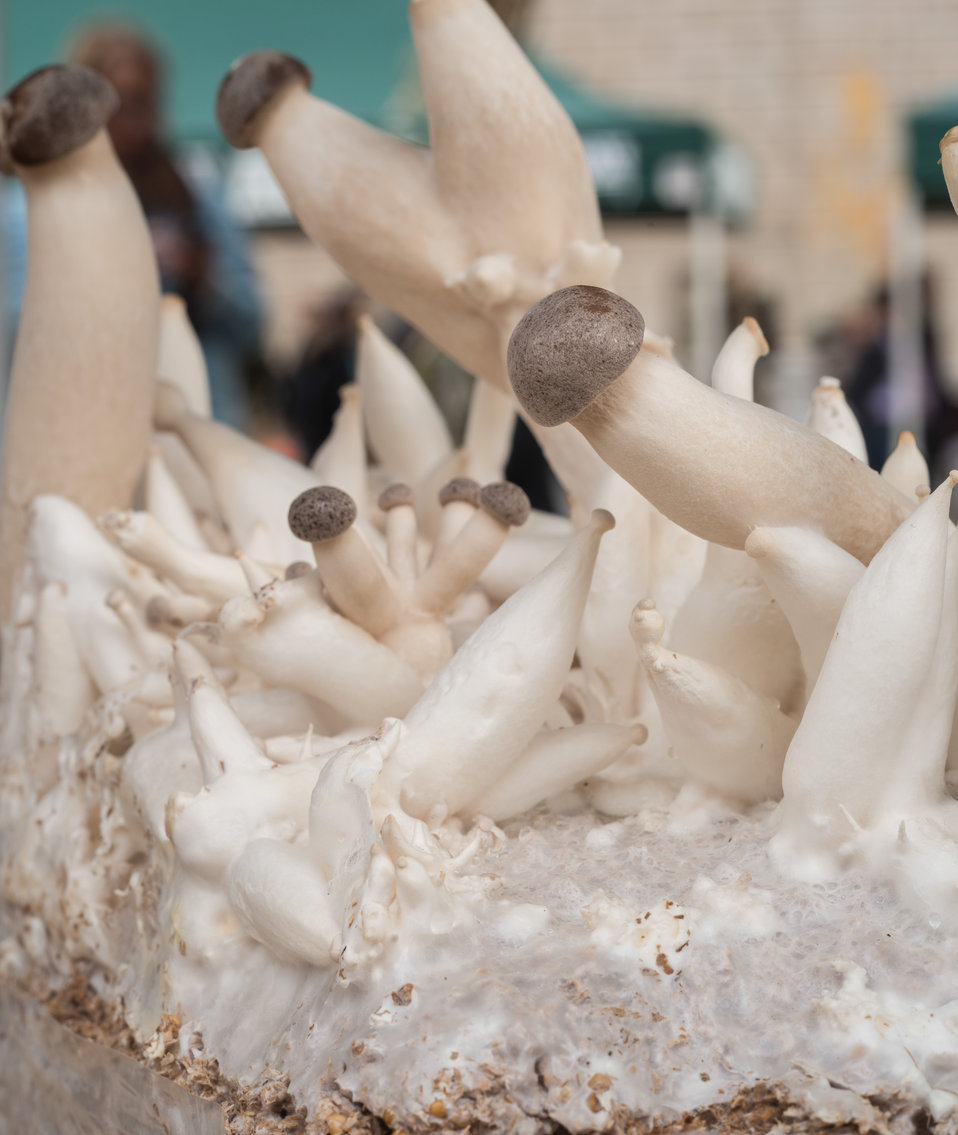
Young royal trumpet mushrooms growing on a sawdust growing medium on display at the U.S. Department of Agriculture (USDA) farmers markets and Harvest Festival at the USDA Whitten Building east parking lot in Washington, DC, on Friday, November 22, 2013.